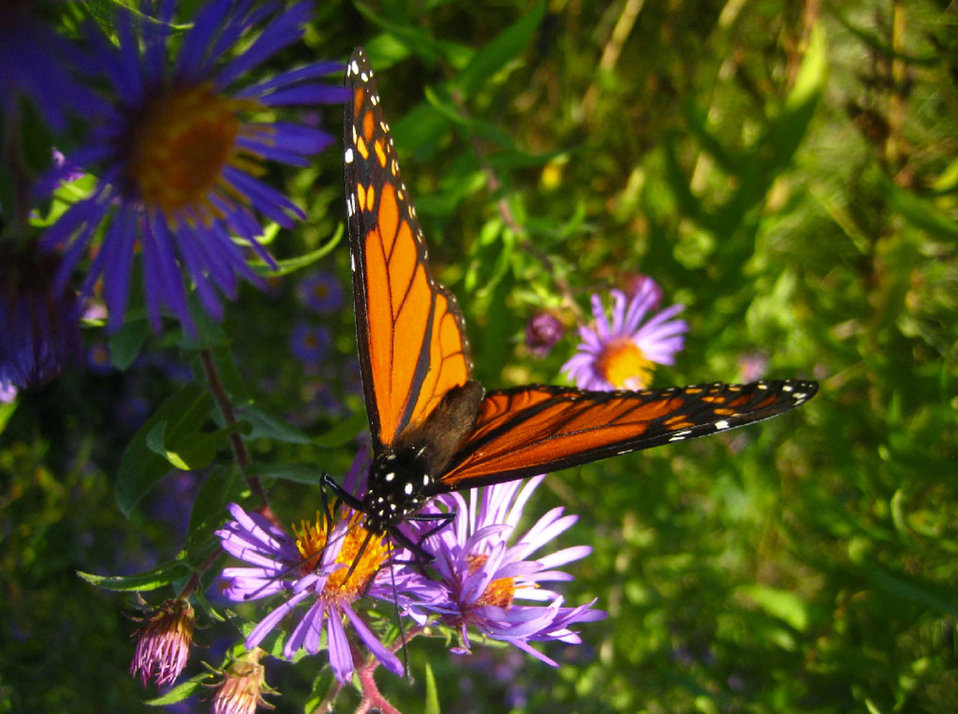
Monarch butterfly

Monarch on a purple flower..